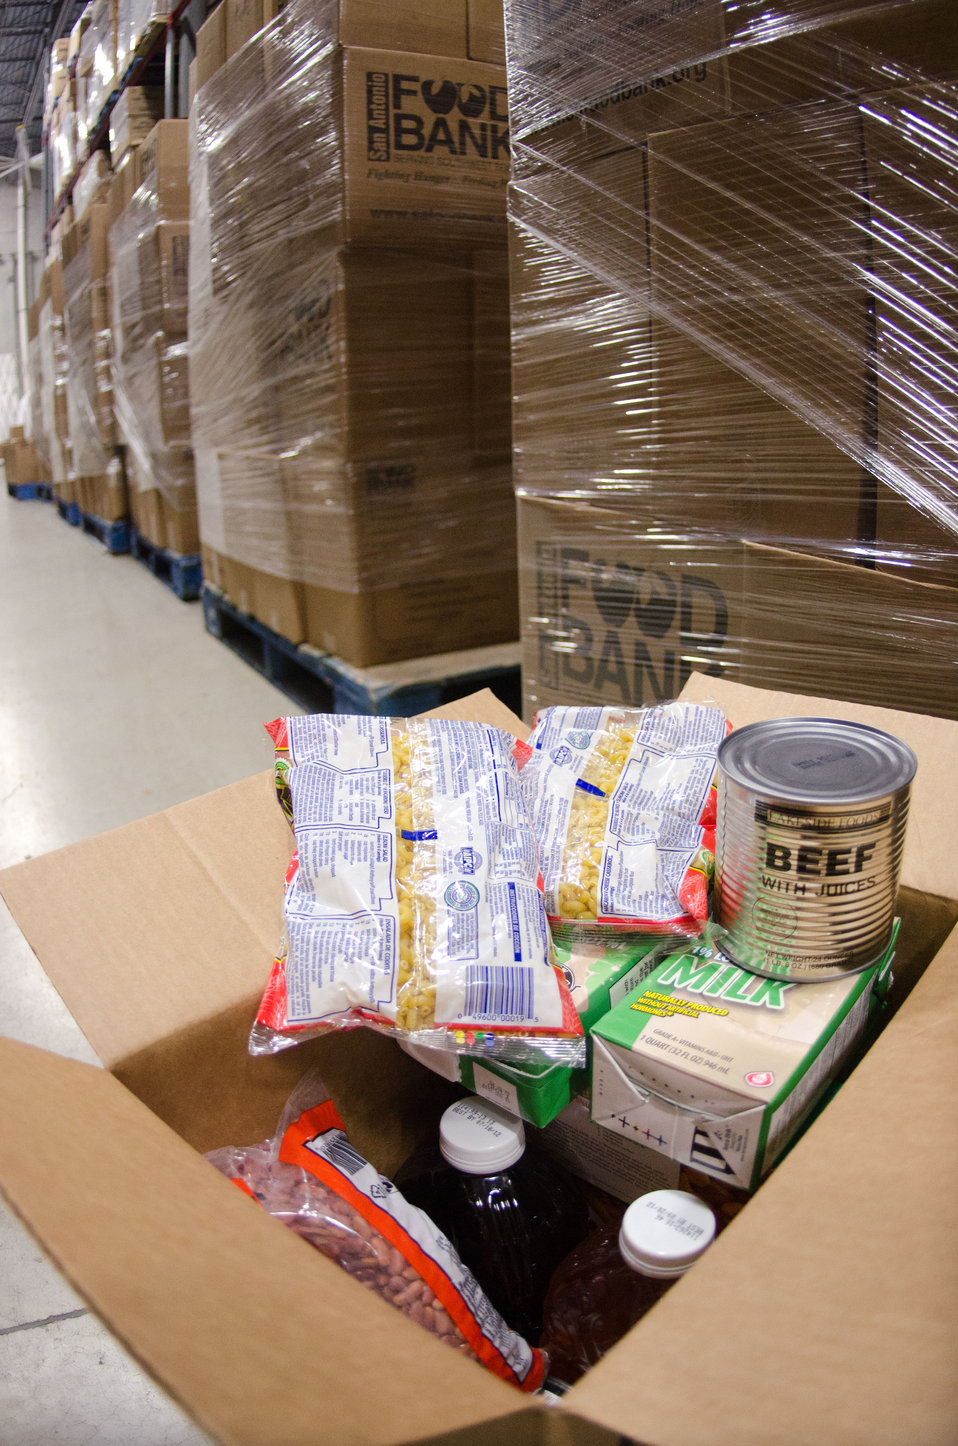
The United States Department of Agriculture donates commodities through programs such as The Emergency Food Assistance Program (TEFAP), which the San Antonio Food Bank (SAFB) packages and palletizes them for fast distribution from its San Antonio, TX., headquarters, on Monday, October 31, 2011. SAFB is a non-profit organization that serves as a clearinghouse by receiving and storing truckloads of donated food, produce, and other grocery products, they then distributes these items to over 500 service agencies that help people in need.
“We couldn’t do what we do without our partnership with USDA’” said President and CEO Eric Cooper. He continues, “We are privileged in partnering (with the USDA) to feeding kids, through the summer, with the Summer Food Service Program, and throughout the year, with the Child and Adult Care Feeding Program (CACFP). Then in our approach to feeding seniors, we partner with USDA in the Commodities Supplemental Food Program (CSFP), and the Senior Farmer’s Market (Nutrition) Program. And then work to bring all our (needy) parties together with our Supplemental Nutrition Assistance Program (SNAP) Outreach. You know, once families have access to food we believe it is important to educate them. Through the support of the SNAP-Education Program we are able to educate them during their time of need. With this comprehensive approach we are really able to get the right food, at the right amount, at the right time, to needy families throughout our community – which allows us to feed the fifty-eight thousand we do, each week.”
SAFB serves 16 counties in Southwest Texas and states, “Nearly one out of every four children and one out of every five adults in Southwest Texas lives in poverty and has difficulty meeting basic nutritional needs.” According to SAFB, sixty-five percent of the people requesting emergency food have children. “Additionally, the senior citizens and those living on a fixed income generally have limited funds for a consistent grocery budget.”
San Antonio is the seventh largest city in the nation with surrounding farms and ranches near its rivers and water supplies. When available they provide fresh surplus produce. Other commodities come from the food industry and manufacturers. The major food brand companies that for various reasons have surplus commodities donate it to SAFB.
Texas farmers supply fresh produce to their Fresh Produce Program.
Public donations come in the form of money, food, volunteer time, and advocacy.
Their fleet of trucks pickup and deliver food as needed.